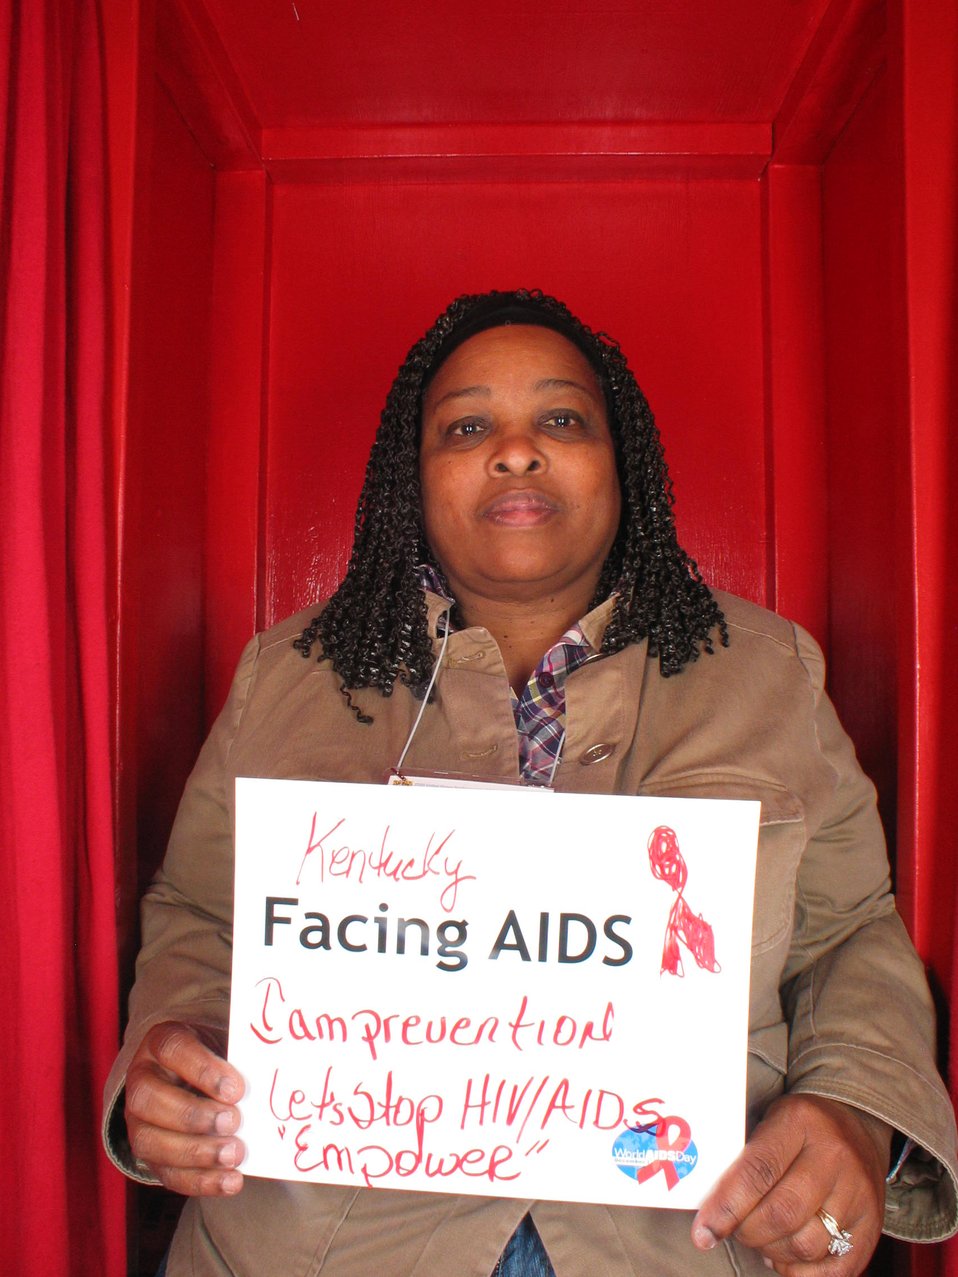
Facing AIDS I am prevention to stop HIV/AIDS 'Empower'